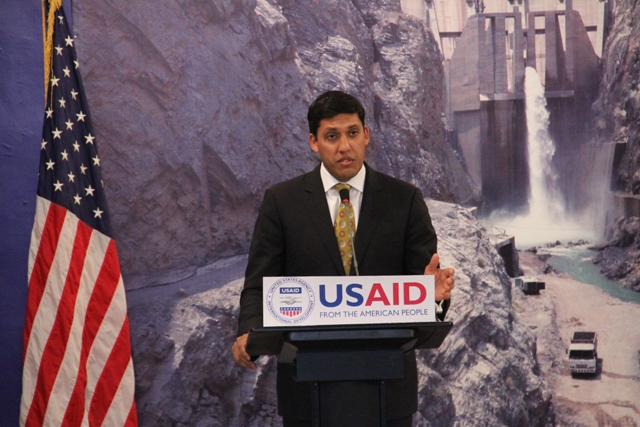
U.S., Pakistan Celebrate More than Five Decades of Development Cooperation on Islamabad, April 13, 2012

Dr. Rajiv Shah, Administrator of the U.S. Agency for International Development or (USAID) and Pakistan’s Finance Minister Hafeez Shaikh inaugurated a photo exhibition. celebrating more than five decades of cooperation between the United States and Pakistan in supporting a more prosperous future for the people of Pakistan. The exhibition will be open at the Pakistan National Council of the Arts (PNCA) through April 17.